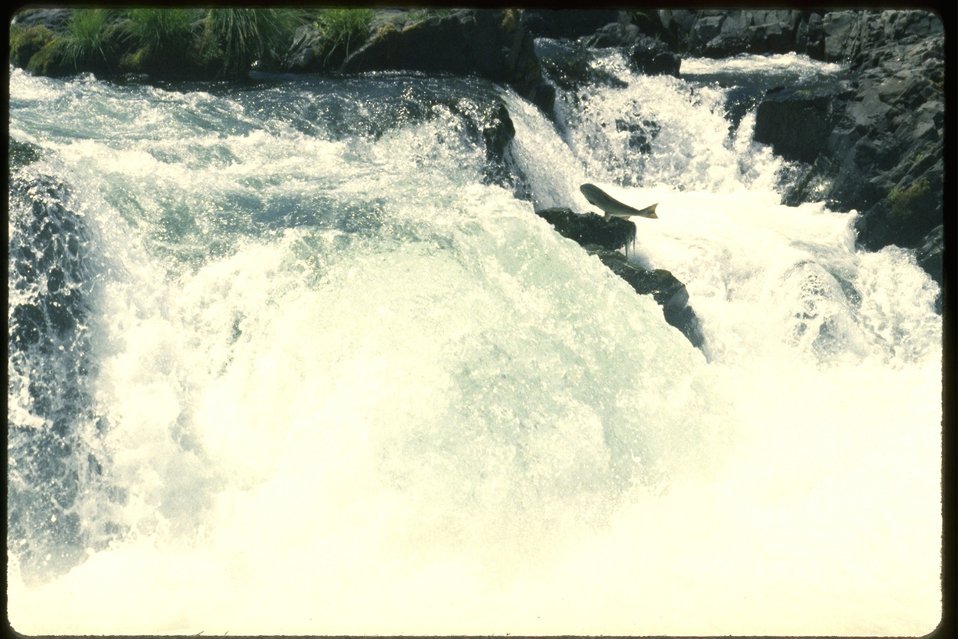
Fish jumping at Deadline Falls.